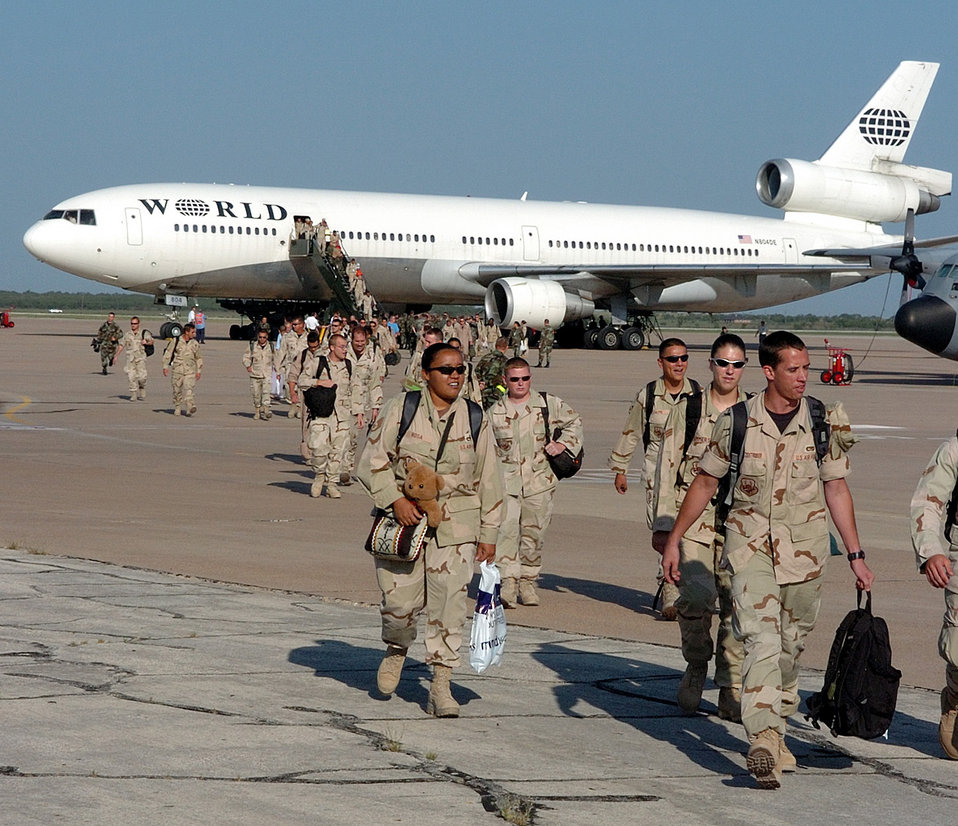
Airmen return from deployment

Airmen return home to Dyess Air Force Base, Texas, on Sept. 13, after deploying in support of operations Enduring Freedom and Iraqi Freedom.